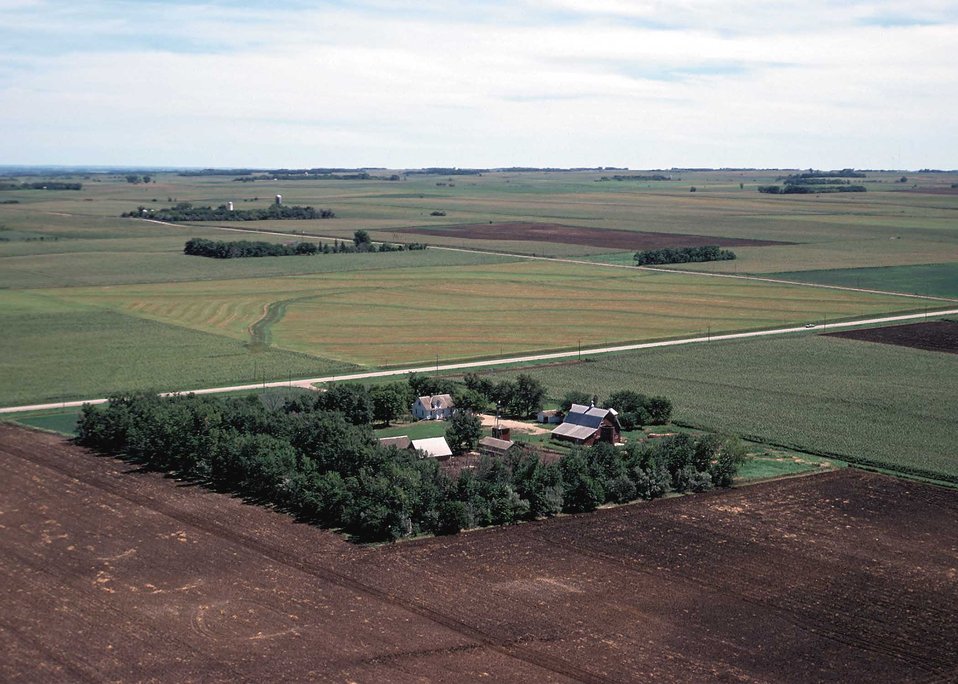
A windbreak protects this farmstead from harsh winter winds and provides habitat for wildlife.